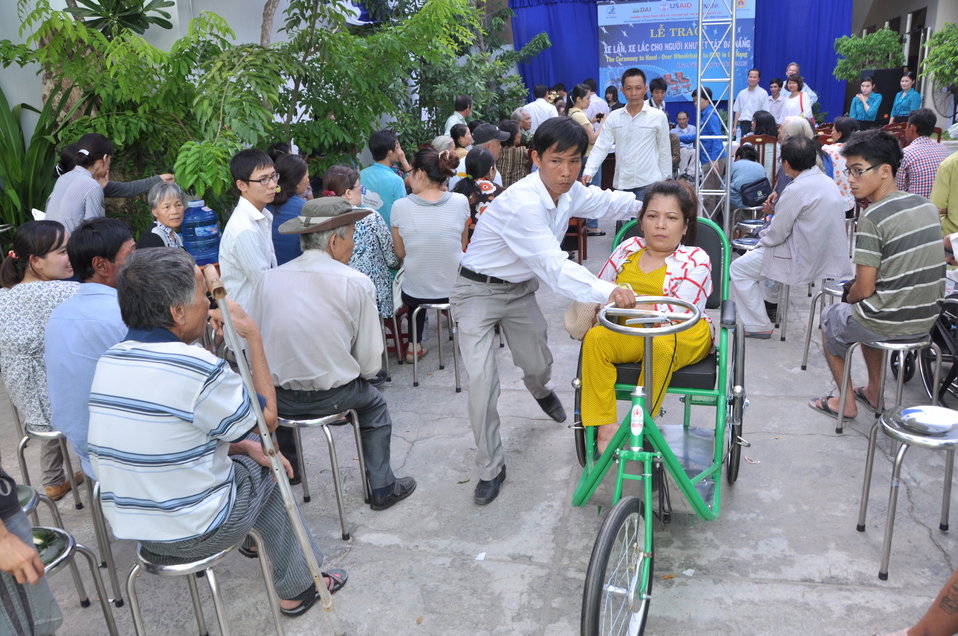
USAID Project Supports Rehabilitation Department for Children and Wheelchair Distribution in Danang

Beneficiaries in Danang, Vietnam, receive wheelchairs.